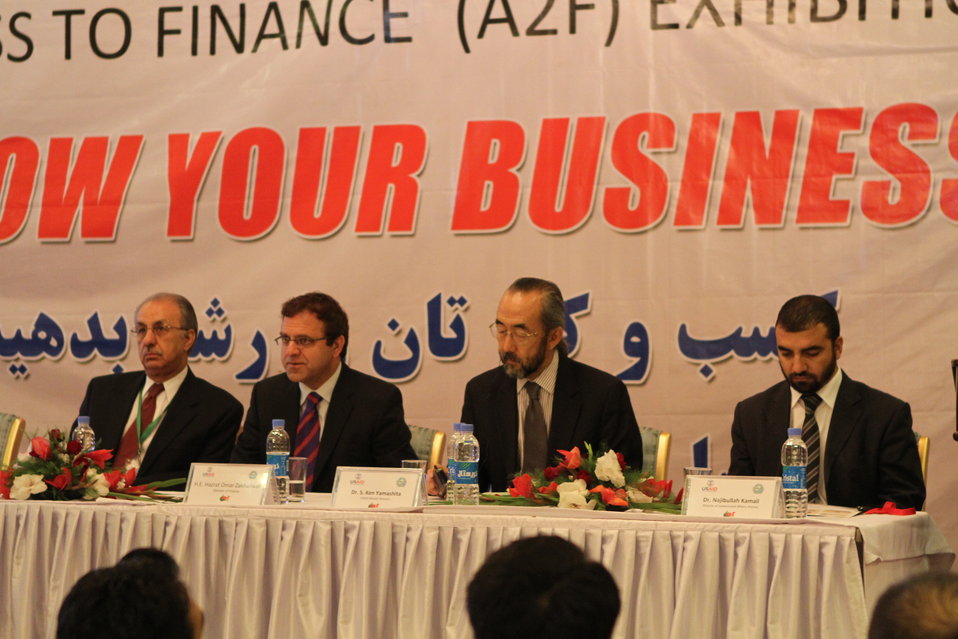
A2F Exhibition